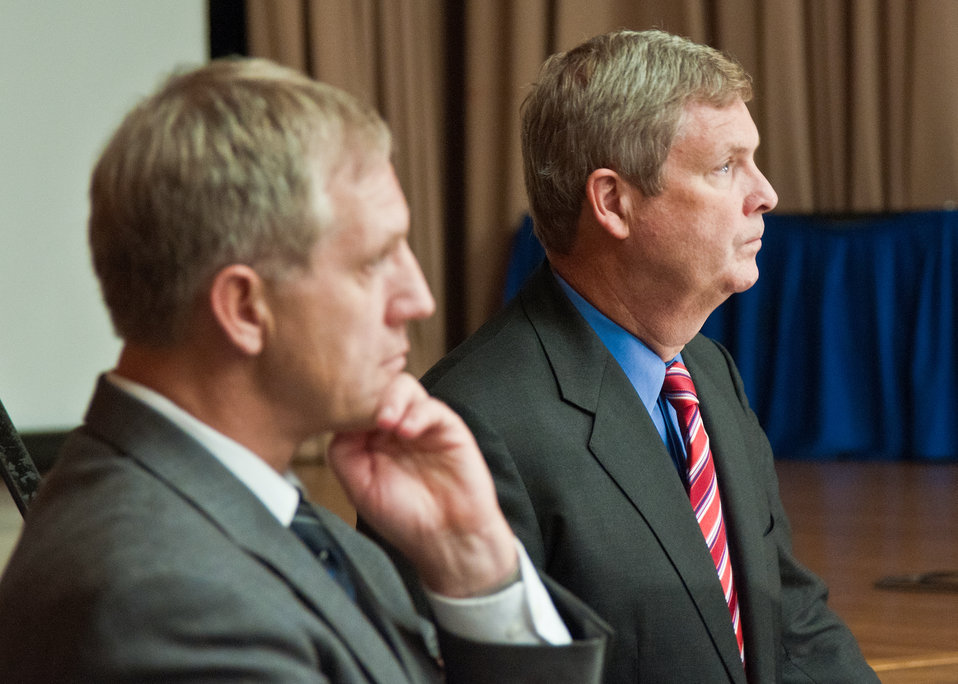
President, National Farmer’s Union (left) Roger Johnson and Agriculture Secretary Tom Vilsack (right) listen to questions posed by members of the National Farmer’s Union during their annual Fall Legislative Fly-In at the U.S. Department of Agriculture in Washington, D. C. on Monday, Sept. 12, 2011. Johnson is a third-generation family farmer from Turtle Lake, N.D.